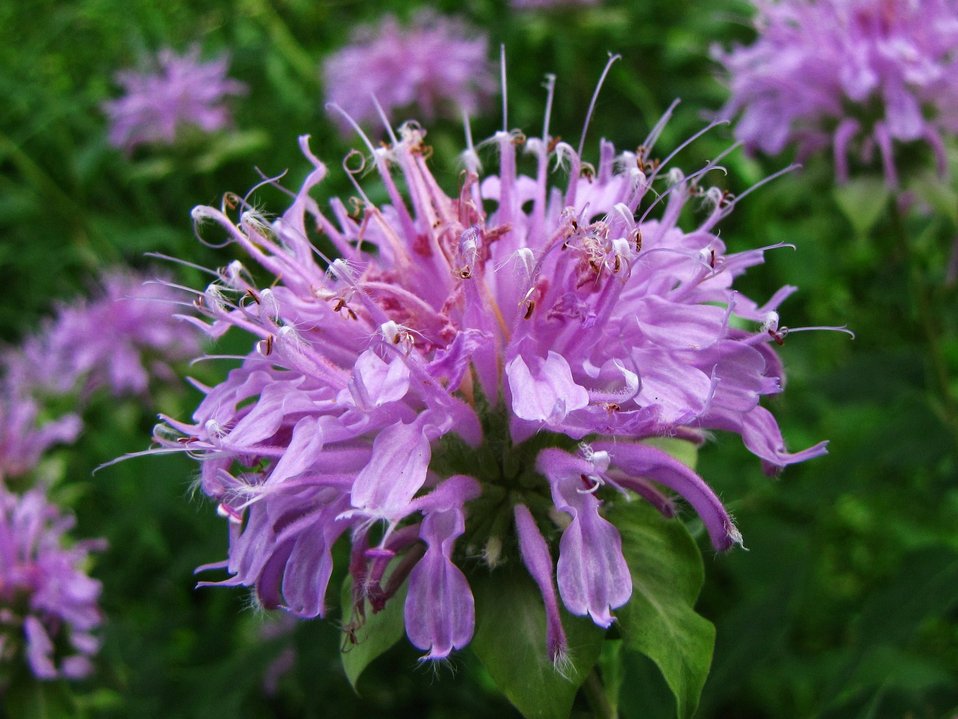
wild bergamot

Port Louisa National Wildlife Refuge, IA